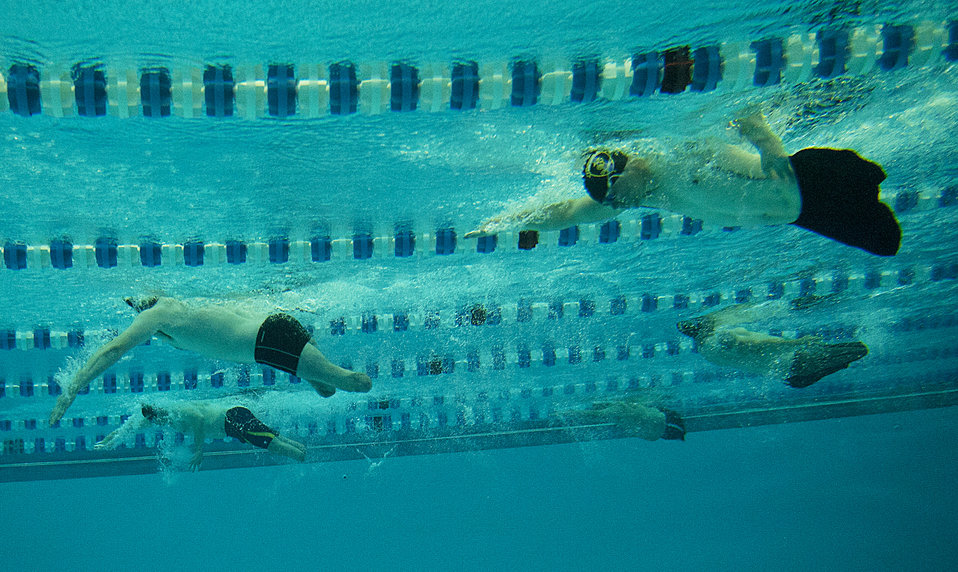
Warrior Games

Athletes take part in a swimming competition during Warrior Games 2012 at the U.S. Air Force Academy in Colorado Springs, Colo., May 5, 2012.